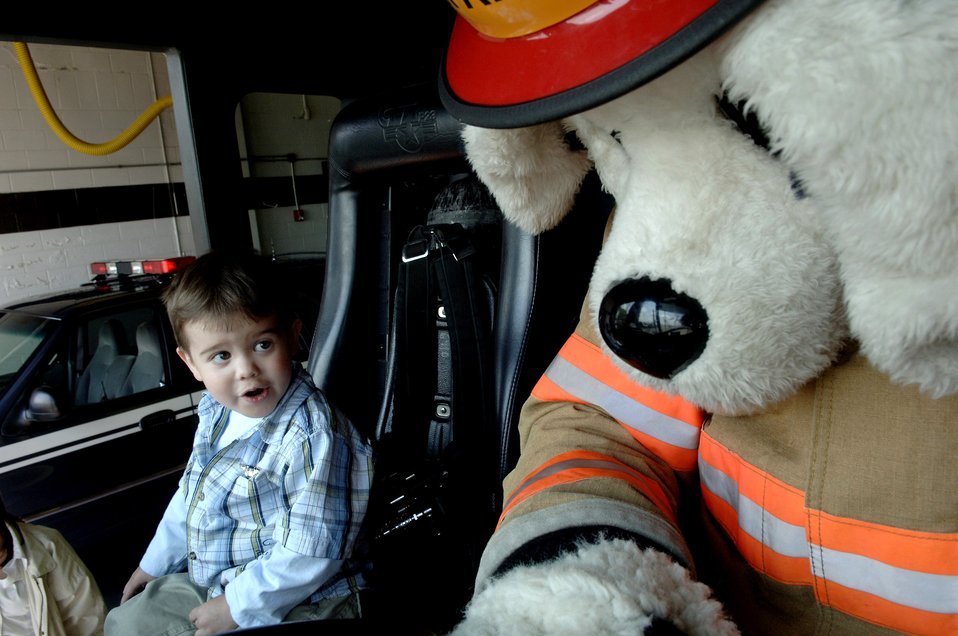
Child becomes pilot for a day at Charleston

Zachary Moore sits next to Sparky in a firetruck during his April 20 tour of the fire station at Charleston Air Force Base, S.C. Members of the 17th Airlift Squadron chose the 3 year old him for the Pilot for a Day program because he was diagnosed with cancer at 18 months. Zachary is the son of Capt. Christopher Moore, the 437th Airlift Wing chief of Public Affairs.